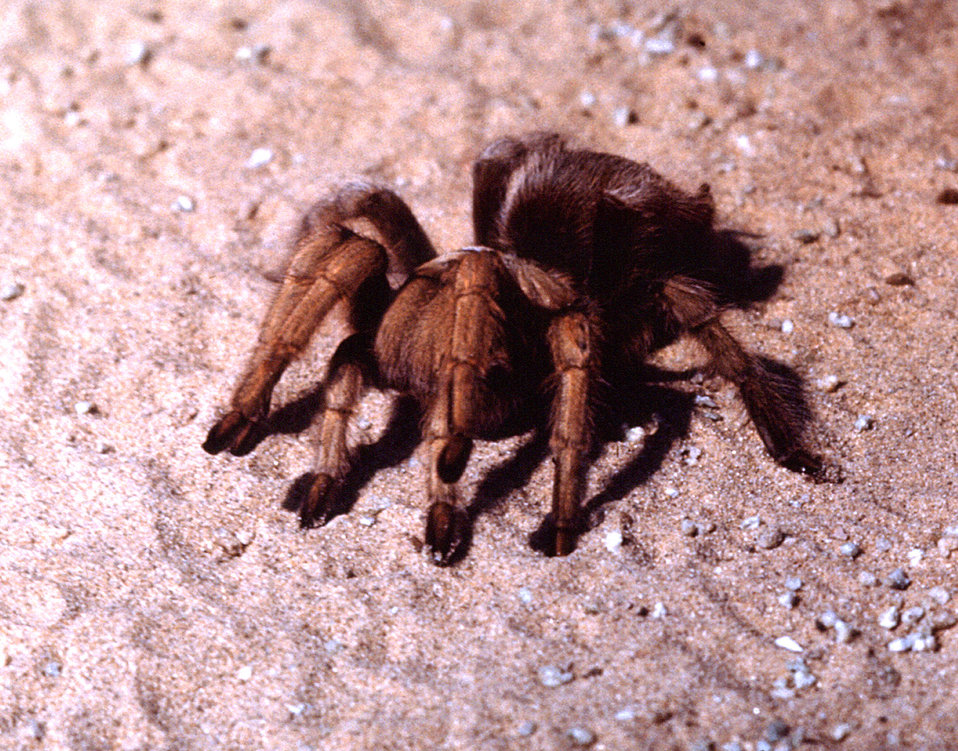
This image depicts a tarantula spider; a member of the order Araneae, and the family Theraphosidae.